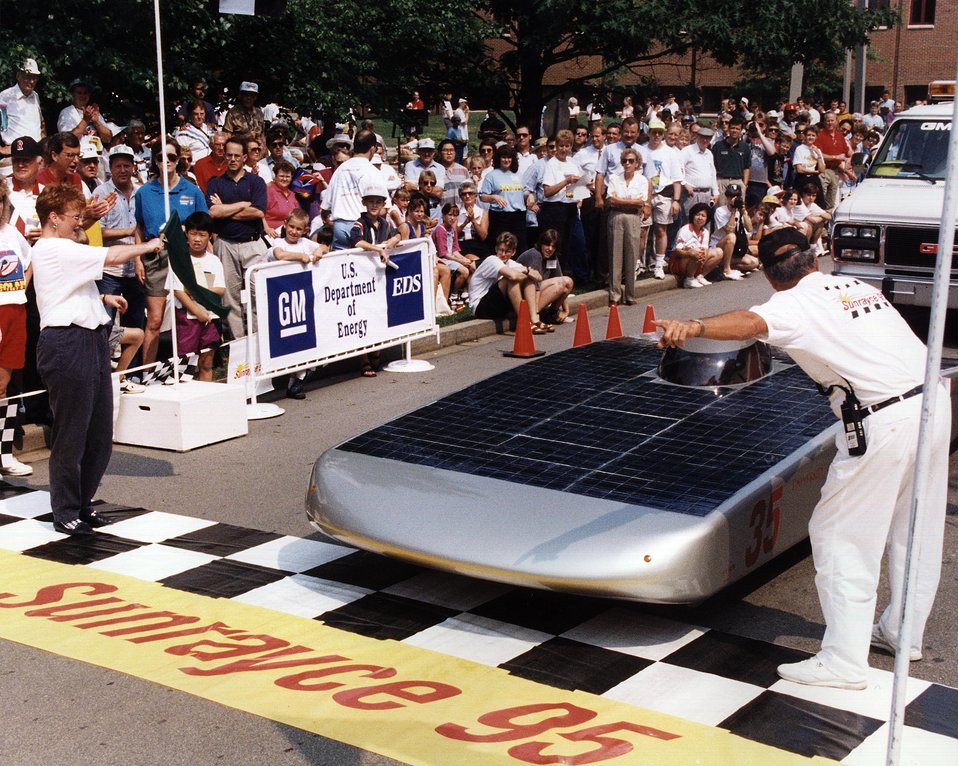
THE UNIVERSITY OF MINNESOTA CAME IN SECOND WITH AURORA II.'